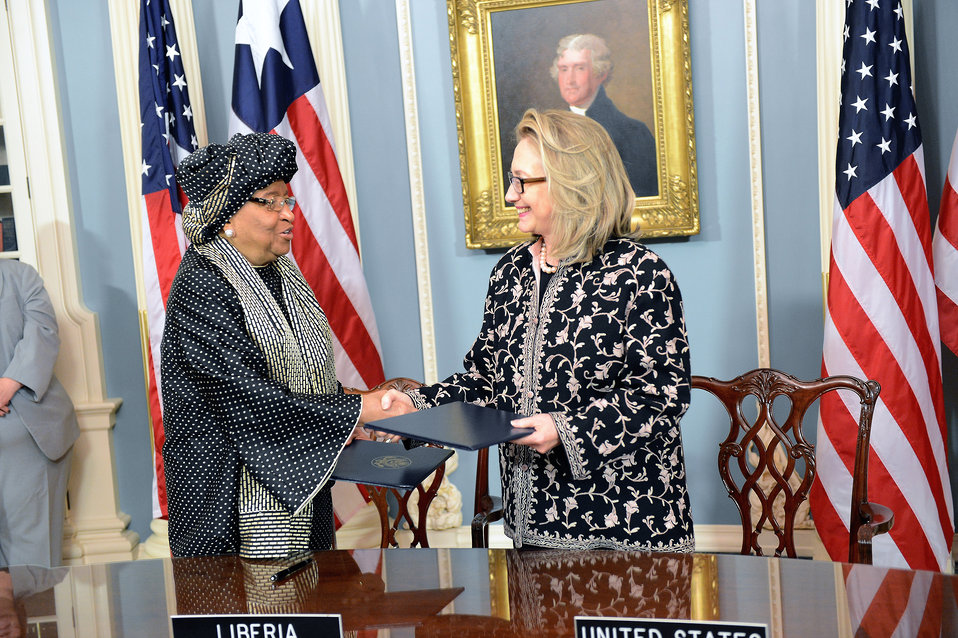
Secretary Clinton Shakes Hands With Liberian President Sirleaf

U.S. Secretary of State Hillary Rodham Clinton shakes hands with Liberian President Ellen Johnson Sirleaf during a U.S.-Liberia Partnership Dialogue signing ceremony at the U.S. Department of State in Washington, D.C., January 15, 2013.